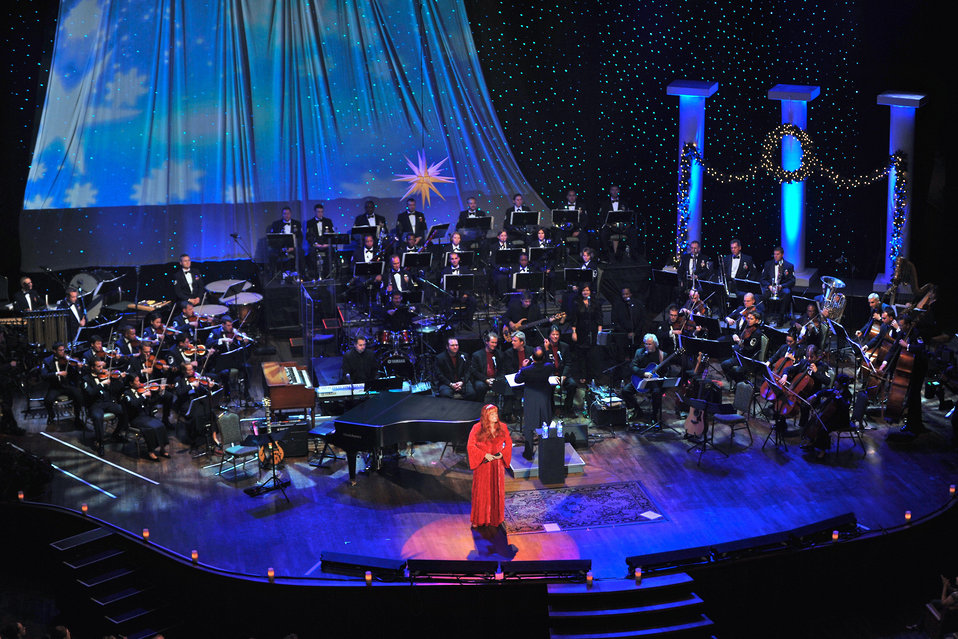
Wynonna Judd joins Reserve Band for TV broadcast

Wynonna Judd sings classic holiday music while the Band of the Air Force Reserve and Air Force Strings perform in the background during the 2008 Holiday Notes from Home concert recorded Dec. 9 in Nashville, Tenn. The concert is annual holiday event recorded at the Grand Ole Opry House as a tribute to military men and women serving around the world. The show airs on Great American Country and on American Forces Network channels throughout December.